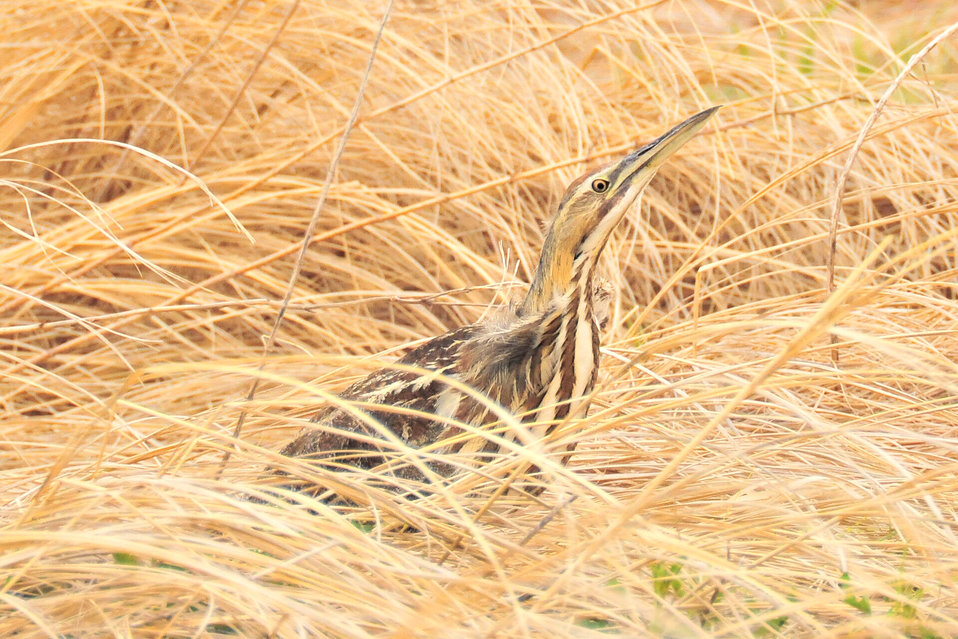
American Bittern on Lacreek NWR 3